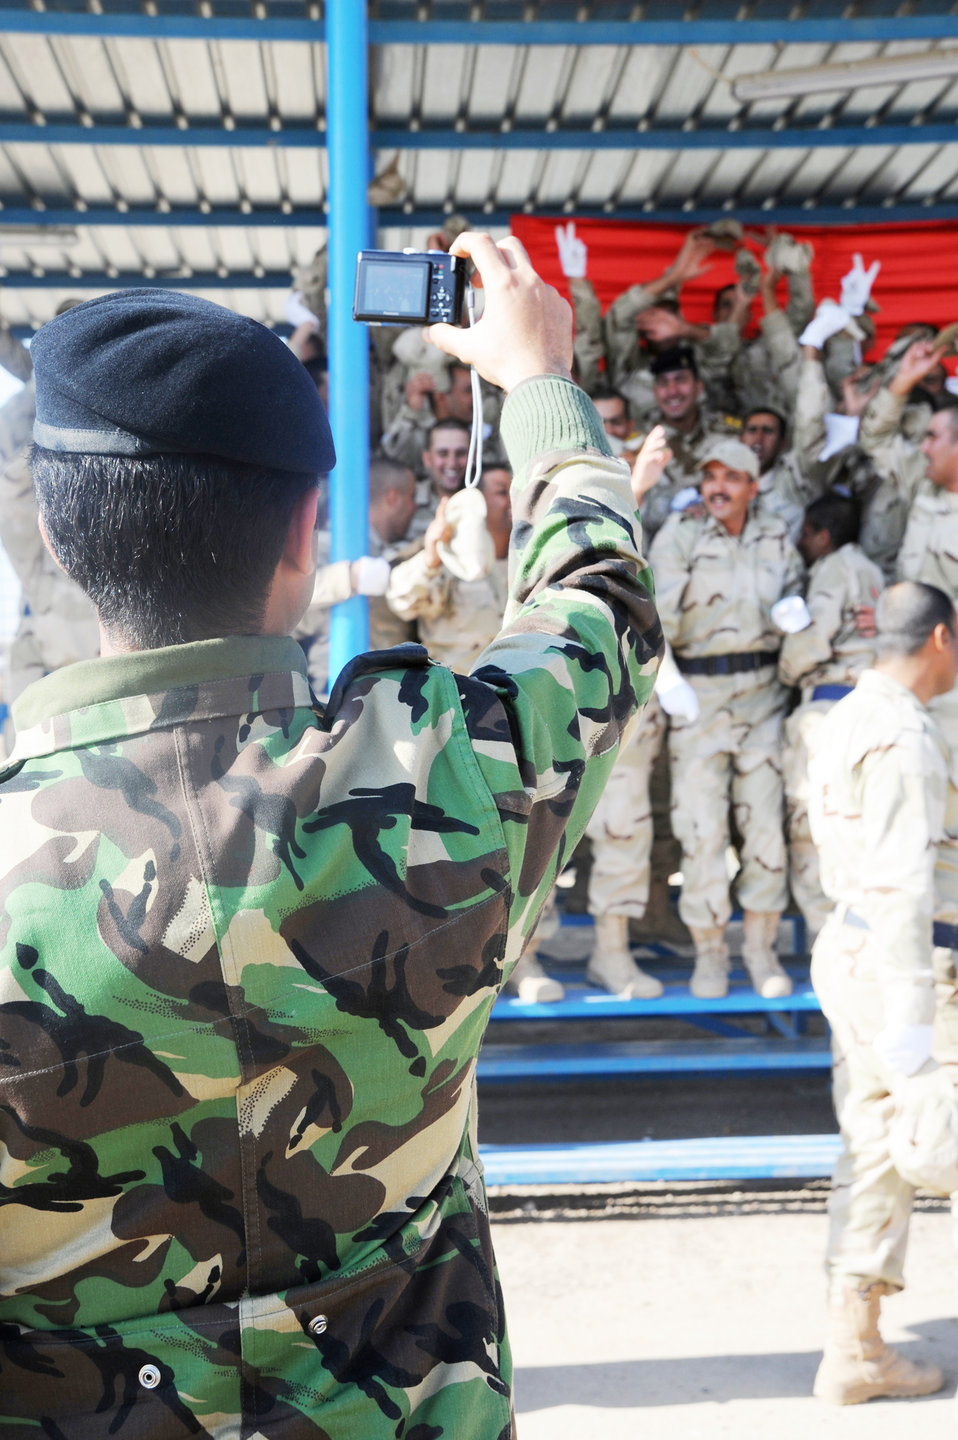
New recruits get a leg up

An Iraqi air force instructor takes a photo of new recruits celebrating after their graduation from the basic military training Top Off course at the Iraqi Air Force Training School Dec. 28, 2009 at Camp Taji, Iraq. The Top Off course teaches recruits about rank structure, leadership and what kind of benefits they will receive.